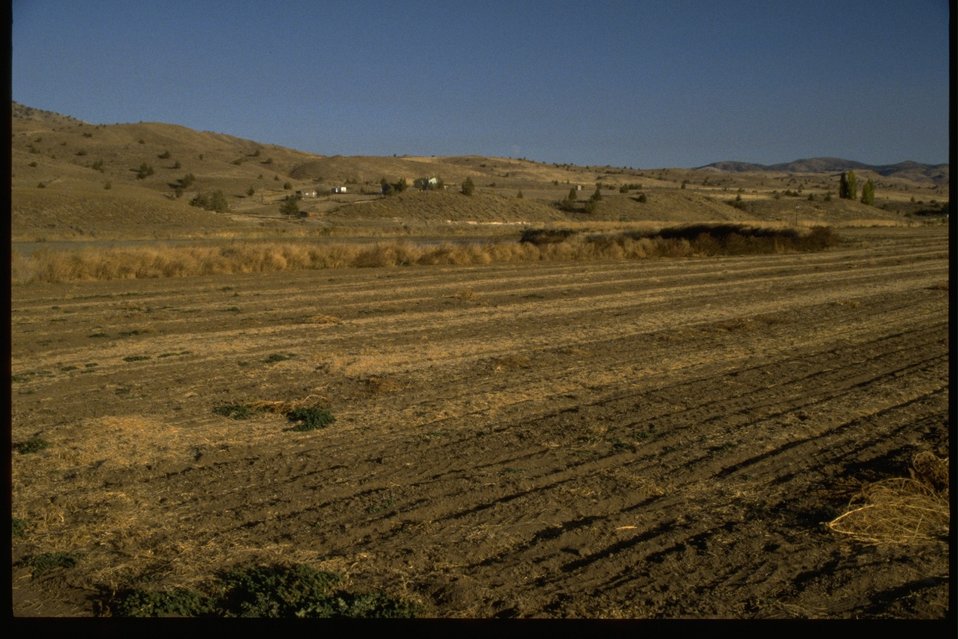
Clarno BLM agriculture field with private farm across the John Day River.